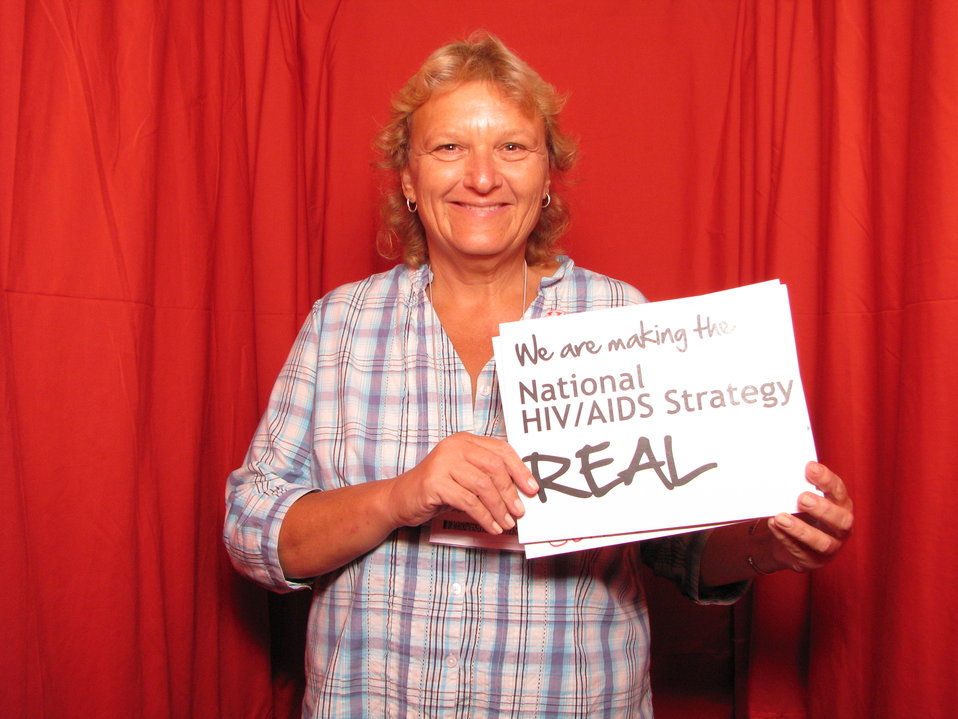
We are making the National HIV/AIDS Strategy REAL

From the AIDS.gov photo booth at the U.S. Conference on AIDS, September 2010 (Orlando, FL).